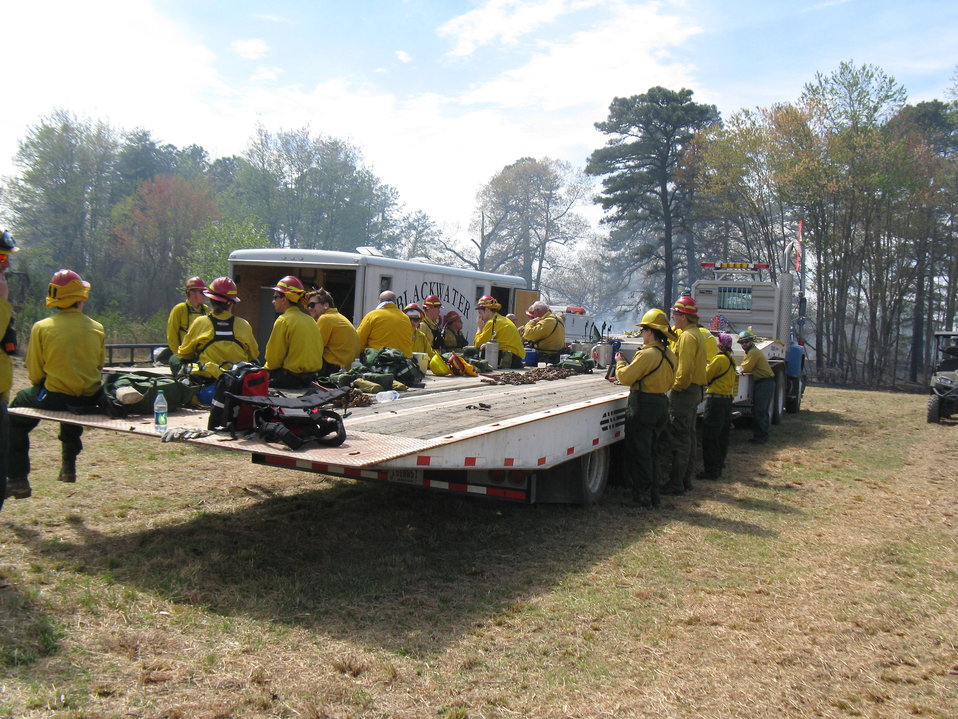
After Action Review

Laurel, Maryland, April 5, 2012: Firefighters rest on an equipment trailer after reviewing their actions at a successful controlled burn. The burn was done at Patuxent Research Refuge's Savannah Restoration Unit to increase refuge species and habitat diversity. Specifically, the refuge hoped to increase density and diversity of rare darkling beetles and forest floor plants.